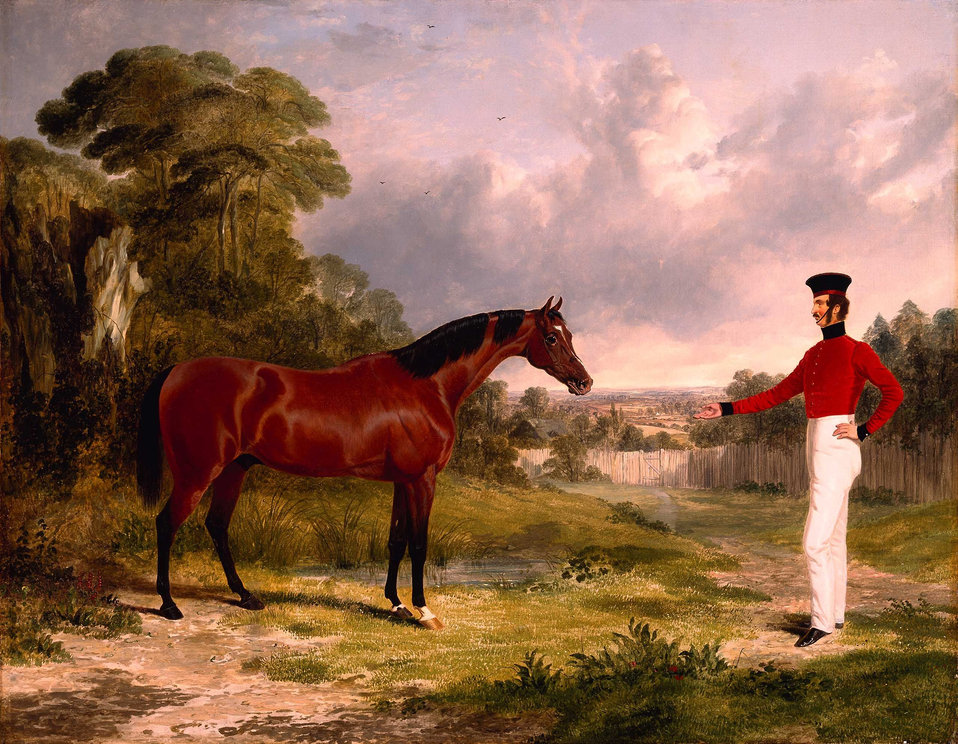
A Soldier with an Officer's Charger) by John Frederick Herring, Sr.